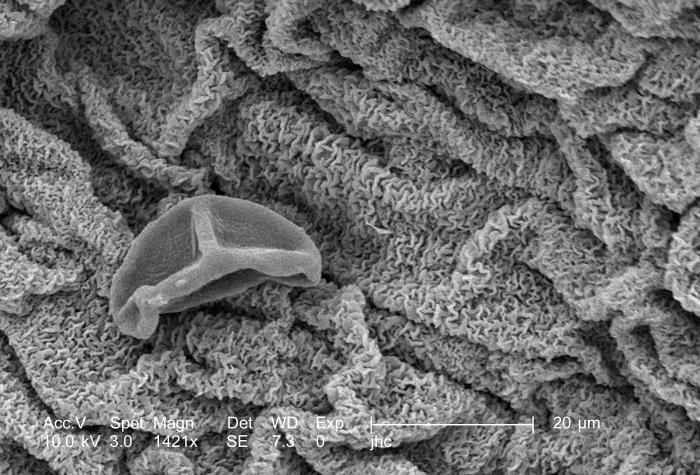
Under a high magnification of 1421x, this scanning electron micrograph (SEM) revealed some of the morphologic ultrastructure found on the petal of an unidentified specie of "spiderwort" flower, Tradescantia sp.. Note the myriad of textures comprising the petal's surface, a structure that is actually a modified leaf. A single pollen grain was at rest atop the petal in this field of view.